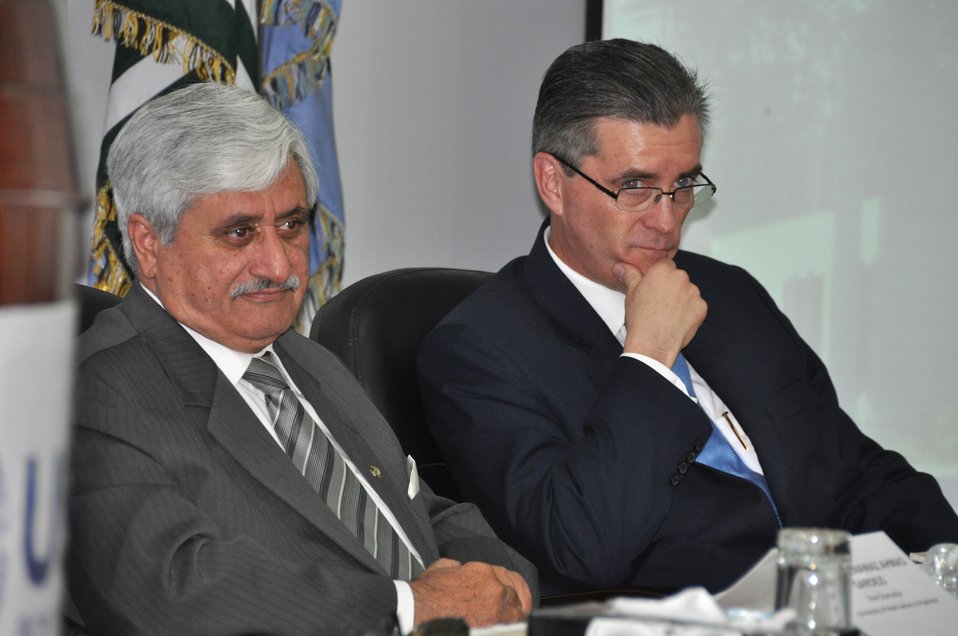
The United States Ambassador to Pakistan, Richard Olson broke ground for a U.S. funded construction of a new Faculty of Education building in Muzaffarabad, AJK.